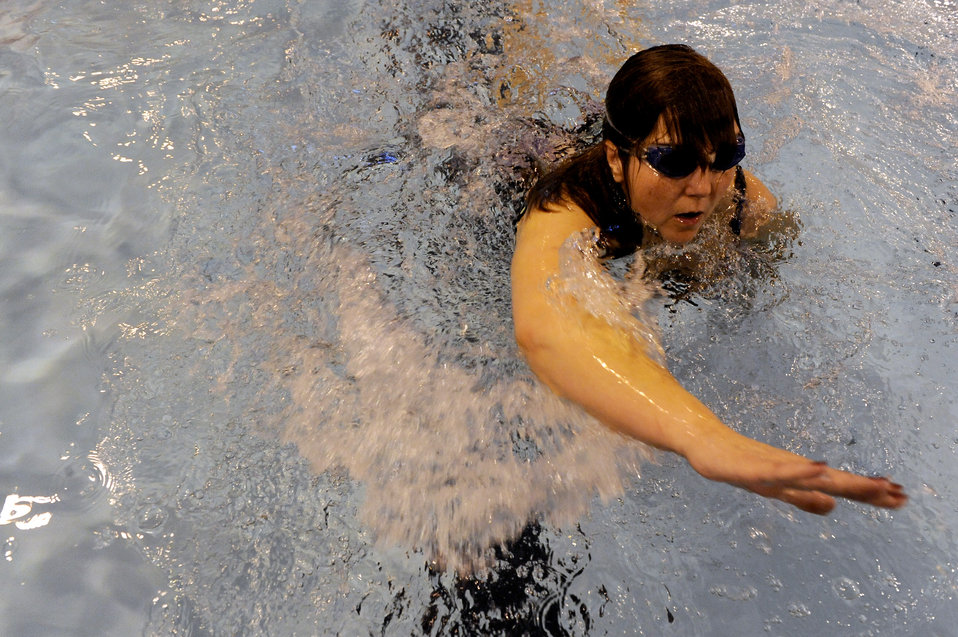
Former Airman competes in veterans Wheelchair Games

Terri Fuda swims as she competes in the swimming competition held at the Whitworth University swimming pool during the 29th National Veterans Wheelchair Games July 15 in Spokane, Wash. Ms. Fuda is an Air Force veteran from Gillespie, Ill.